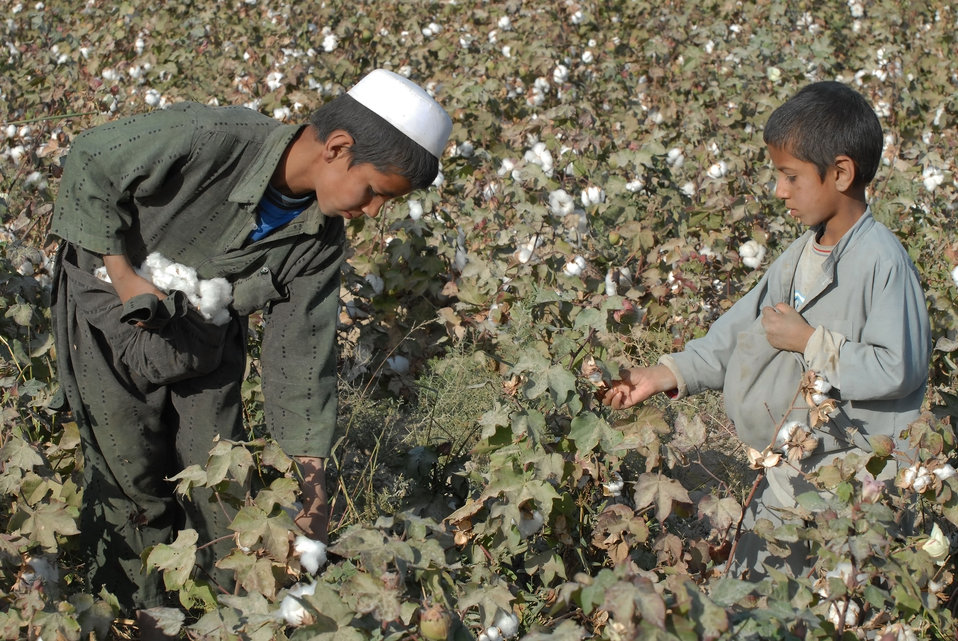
'On the Road' in Balkh Province